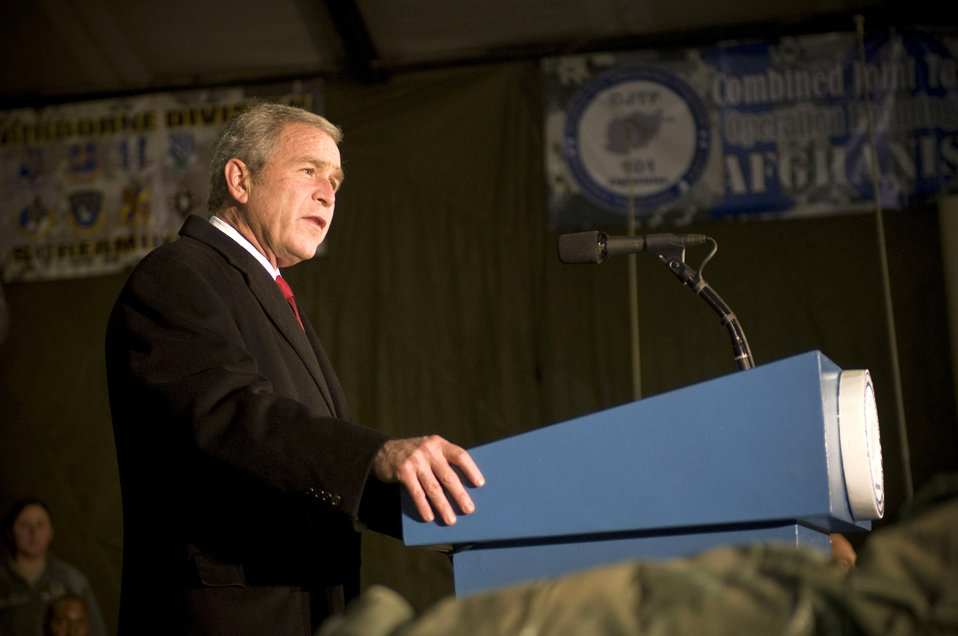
President Bush visits troops in Bagram

President George W. Bush gives a speech to a crowd of military personnel and civilians gathered Dec. 15 at Bagram Airfield, Afghanistan. On his last tour through Afghanistan as president, he thanked all the deployed troops for their hard work and dedication.